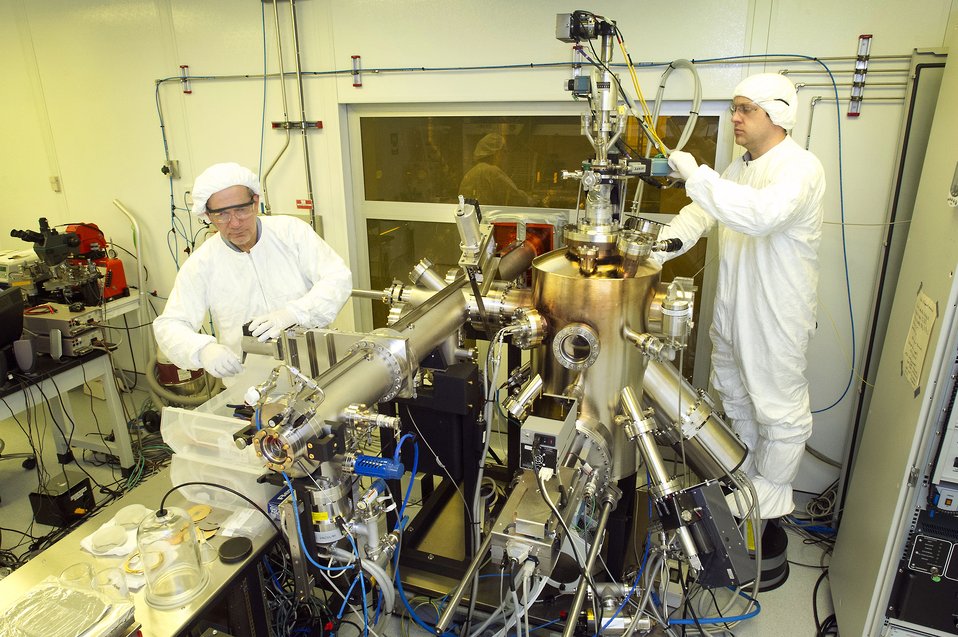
Inside a clean room Brookhaven National Laboratory physicists work on the molecular beam epitaxy system that produced the atomically perfect materials used in the study.